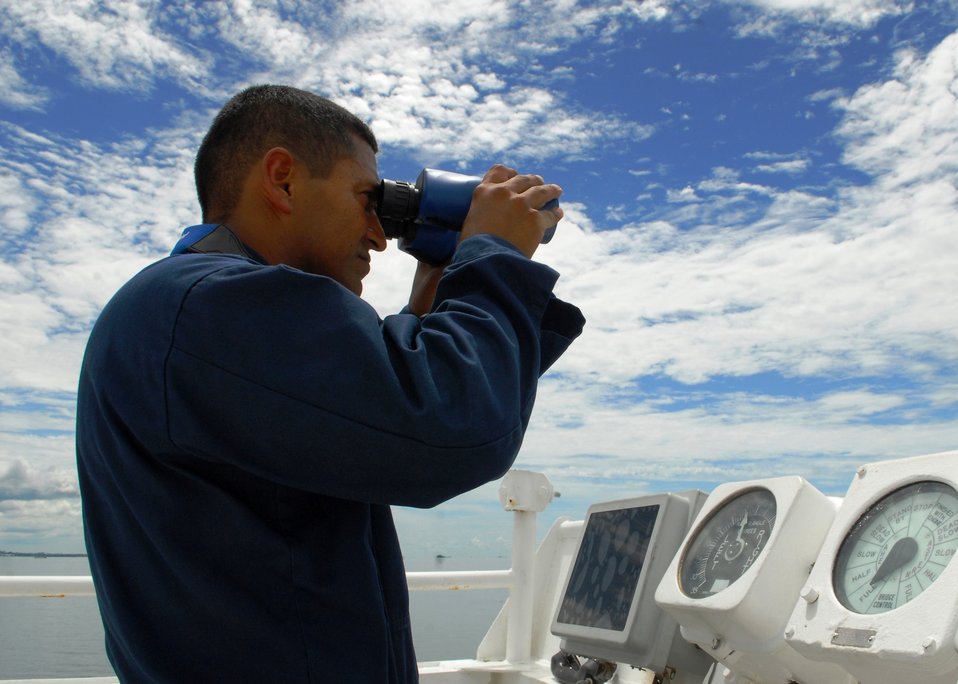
Ordinary Seaman Catalan Looks Through Binoculars

Ordinary Seaman Roberto Catalan, a civilian mariner embarked aboard the Military Sealift Command hospital ship USNS Mercy (T-AH 19), looks through binoculars while Mercy transits the South China Sea on July 5, 2010, during Pacific Partnership 2010, the fifth in a series of annual U.S. Pacific Fleet humanitarian and civic assistance endeavors to strengthen regional partnerships.